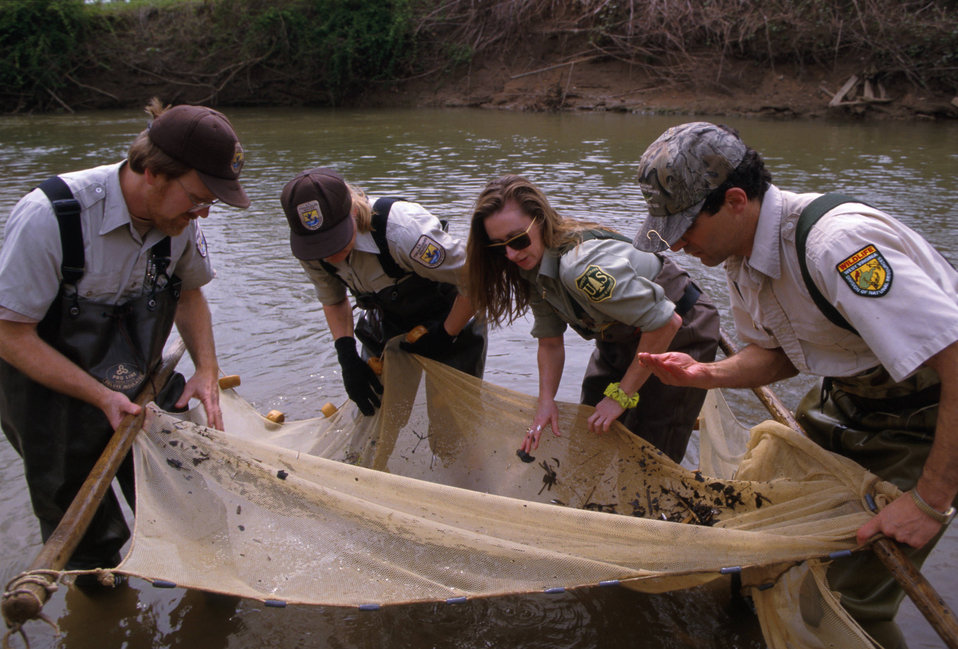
Seining in a Stream with Partners

Photo credit: USFWS/Brian Jonkers

Enhanced coordination between sectors and natural resource managers, land-use planners, and decision makers regarding climate change adaptation is critical